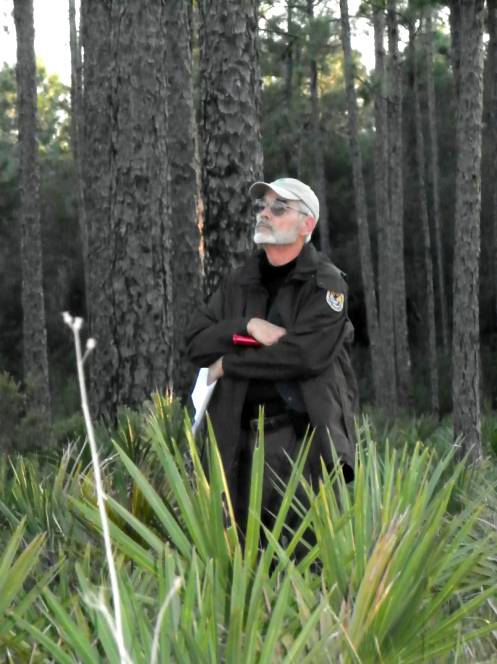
Ted Martin, Fish and Wildlife Biologist in the Alabama Field Office was in the Navy from February 1967 through February 1973, assigned to a high security ocean sound surveillance program referred to as the “O” Program. He received advanced electronic training in Great Lakes, Illinois and Fleet Ballistic Missile sub sonar training in Key West, Florida. Some of his more exciting times were flying in P3’s (four-engine turboprop anti-submarine aircraft) over the Bering Straits.